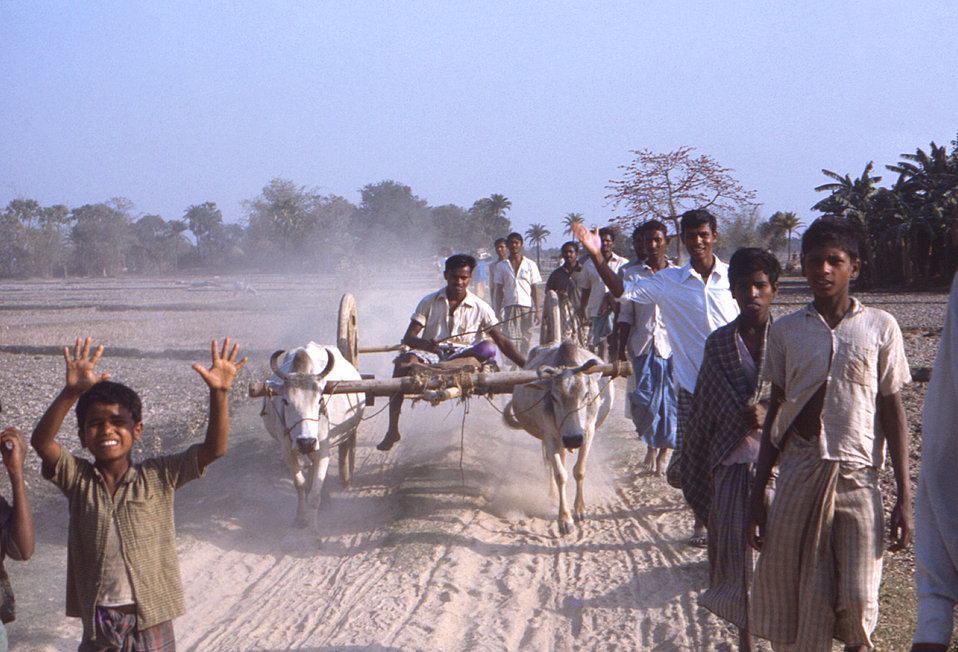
Photographed sometime in the early 1970s, during the worldwide smallpox eradication campaign, this image depicted a dirt roadway on which an ox-drawn cart was traveling, carrying a single male passenger. He was being accompanied by a number of walking Bengali men and boys somewhere in the country of Bangladesh.